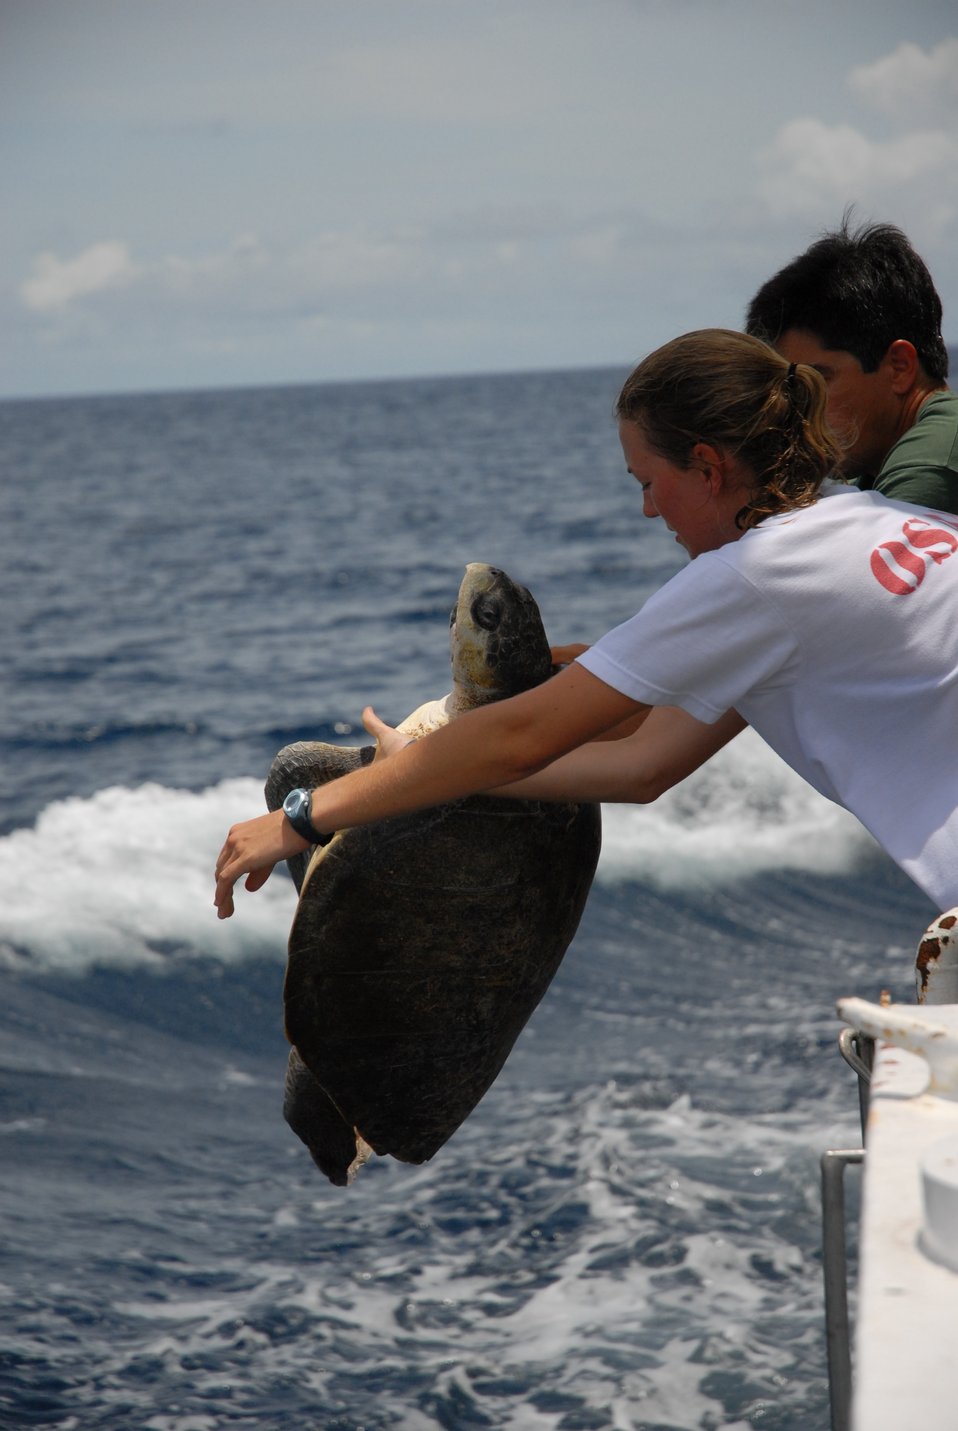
Preparing to return sea turtle to the ocean after completing measurements.